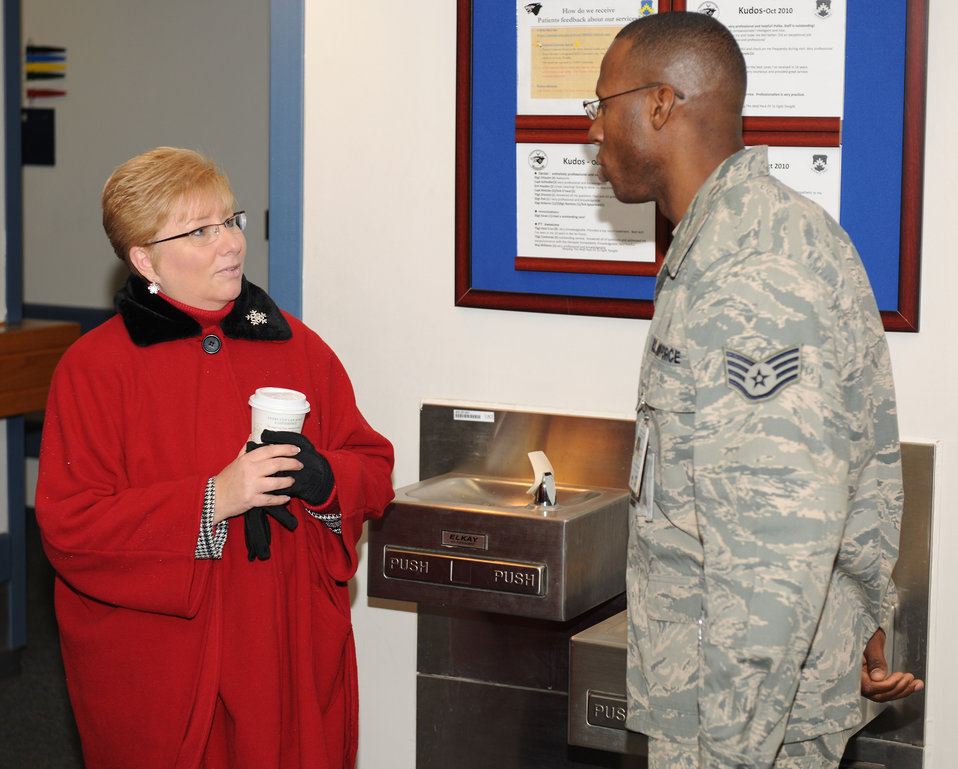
Chief Roy visits Kunsan

Paula Roy, the wife of Chief Master Sgt. of the Air Force James A. Roy, talks with Staff Sgt. Wilsondo Alteus Dec. 30, 2010, during her visit to Kunsan Air Base, South Korea. Chief and Mrs. Roy visited Kunsan AB Dec. 29 and 30, during their year-end tour of Pacific Air Forces bases. Sergeant Alteus is an 8th Medical Operations Squadron flight medicine technician.